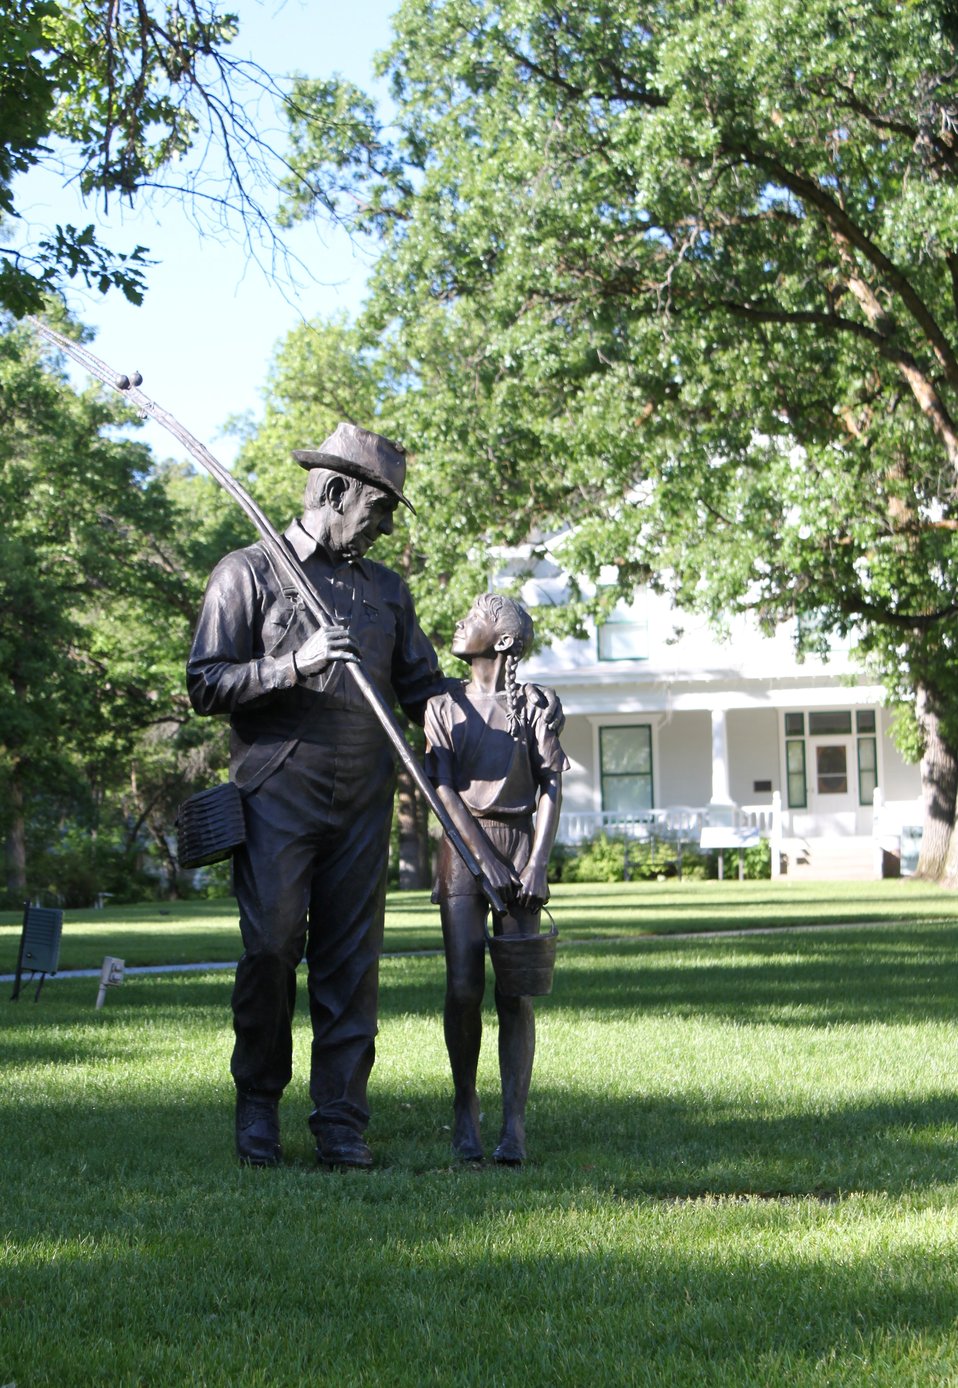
Generations

The bucolic image of a grandparent and grandchild going fishing evokes nostalgia and hope for the future. Conservation is, after all, an investment in the future. Fishing has introduced imnumerable Americans to a conservation ethic. This sculpture stands on the grounds of the D.C. Booth Historic National Fish Hatchery & Archives in Spearfish, South Dakota.

Credit: Craig Springer / USFWS

Photo Contest Entry #147